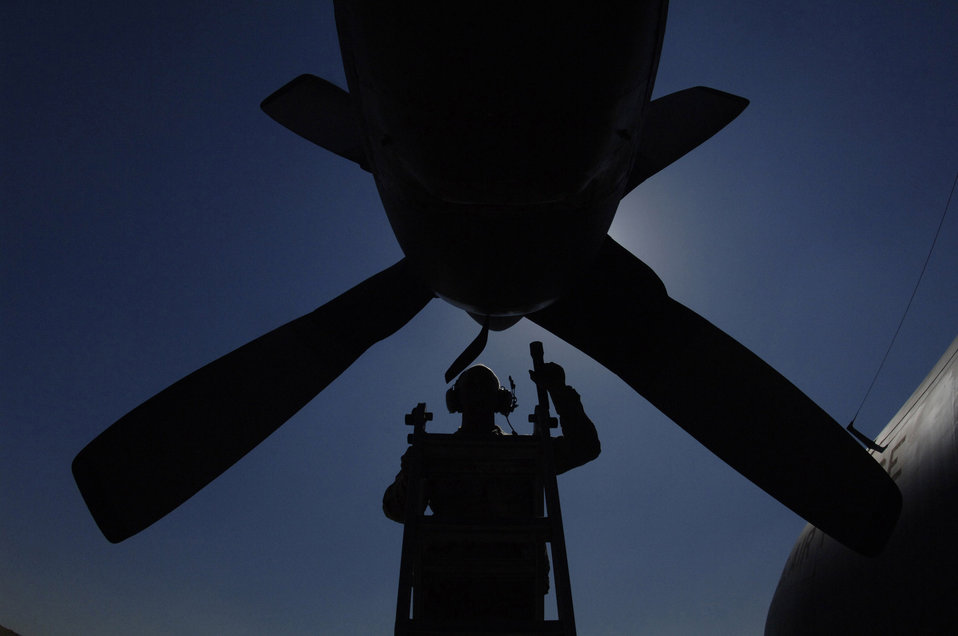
C-130 maintenance unit gets much needed upgrade

Tech. Sgt. John Ryan conducts a post-flight inspection of the turbine of a C-130 Hercules Jan. 25 in Southwest Asia. Sergeant Ryan is a 746th Aircraft Maintenance Unit crew chief.